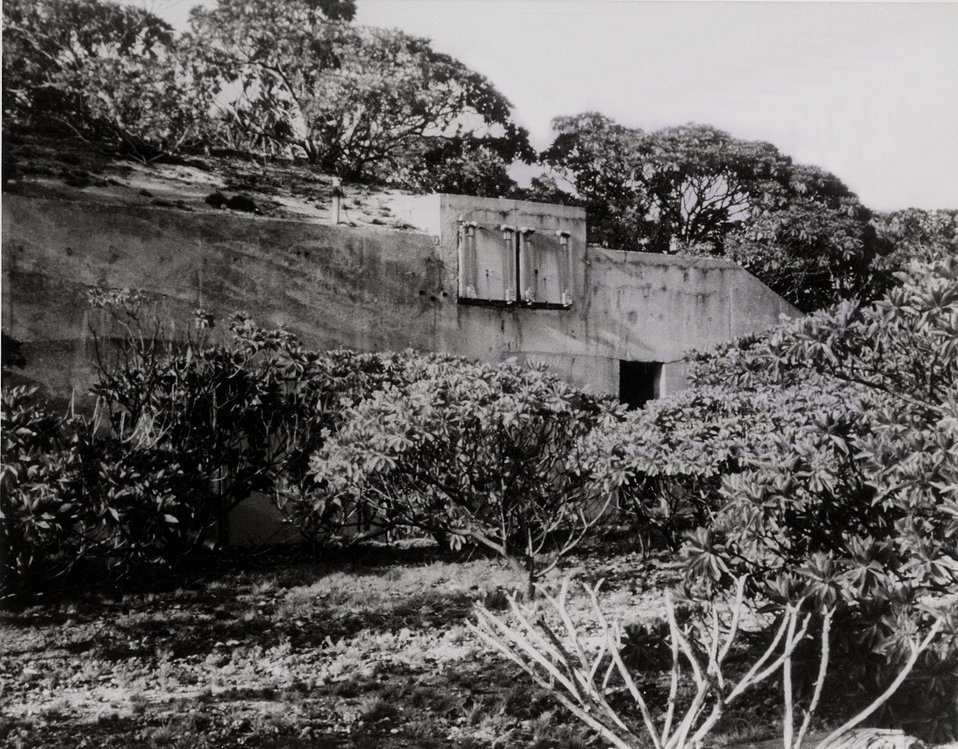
Bikini Atoll, ten years after nuclear testing natives allowed to return.